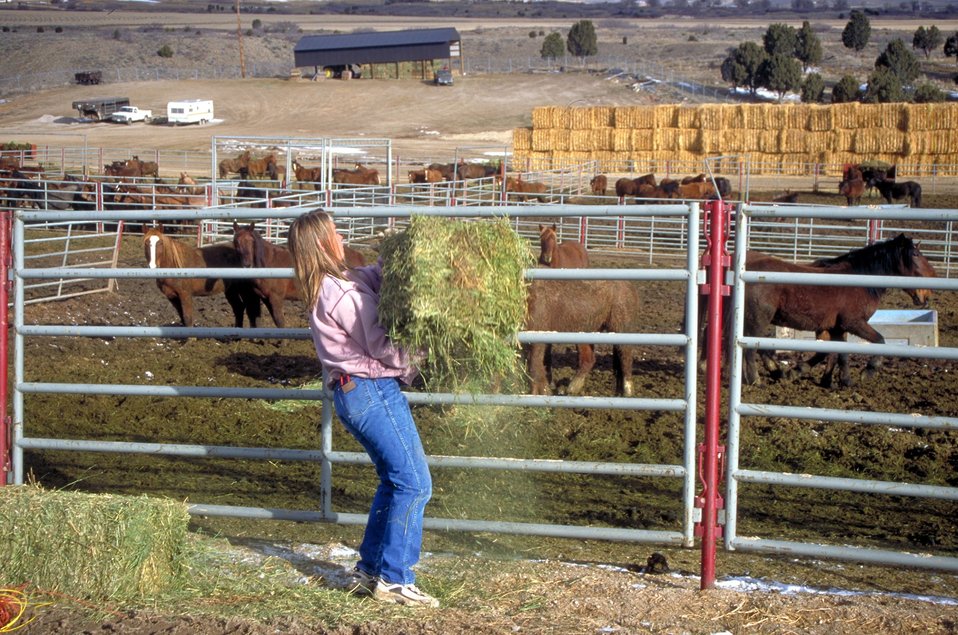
Salt Lake Regional Wild Horse and Burro Center Butterfield Canyon.